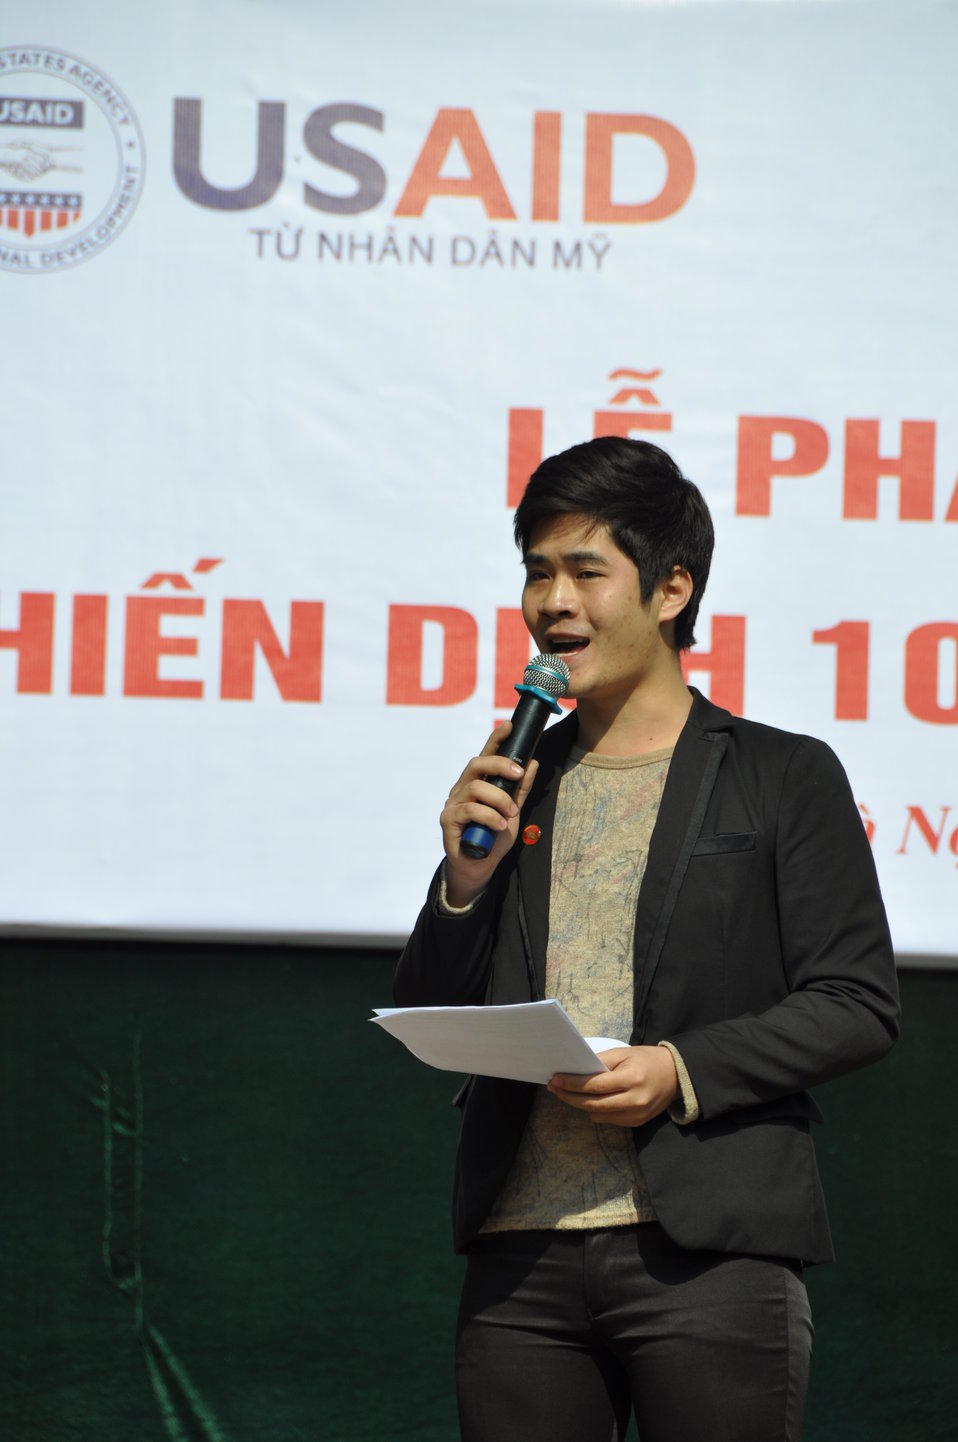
100% Condom Use Campaign Launch, Dec. 2, 2011